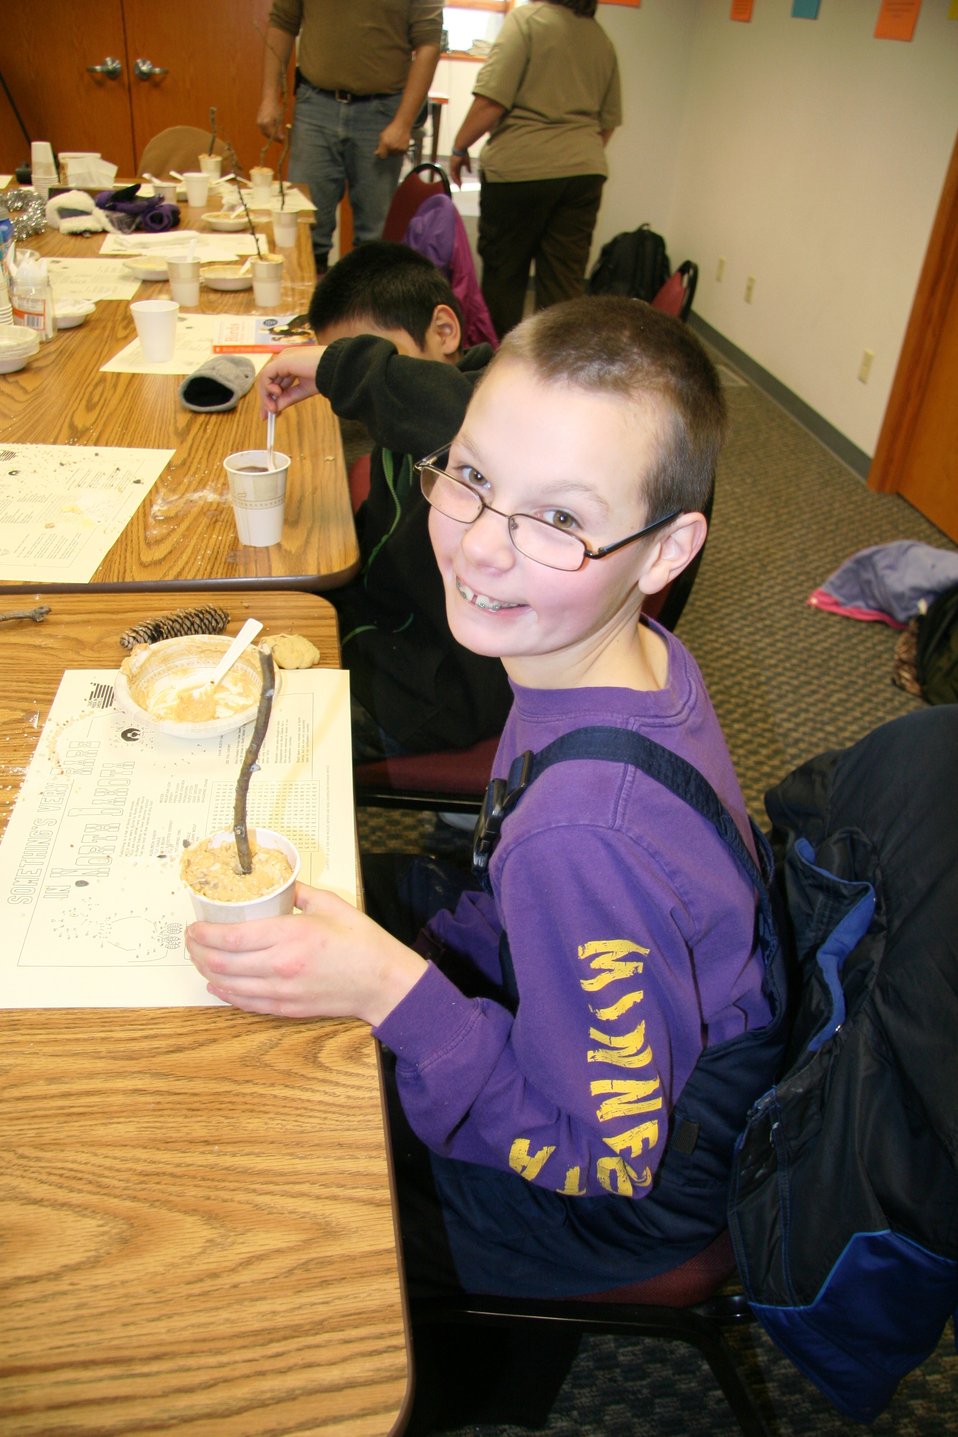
Making Bird Suet Treats

Sticks were added to the suet as a hanging option with string